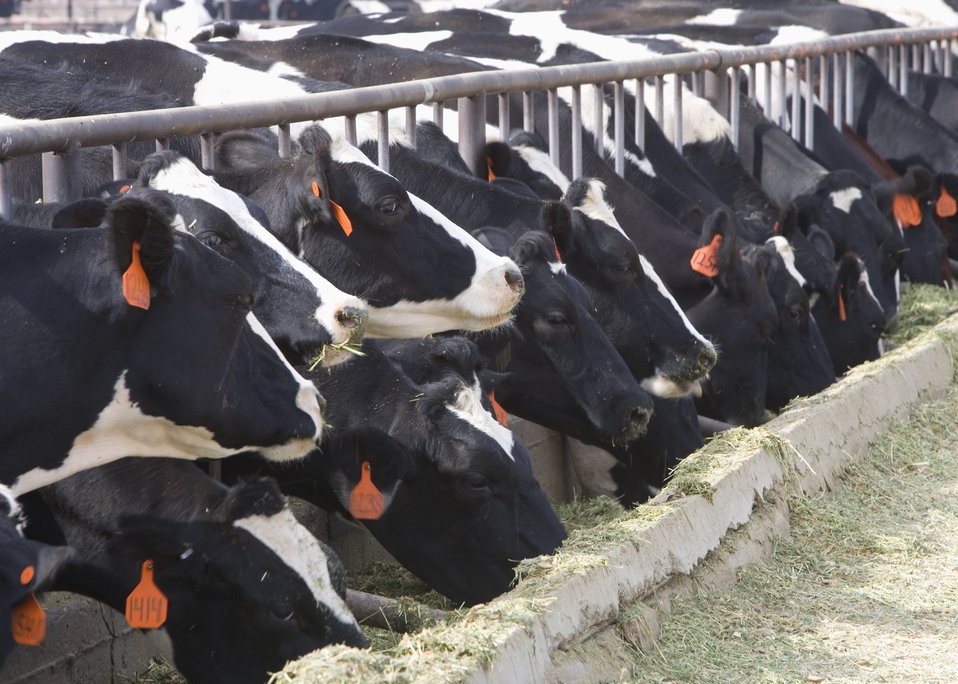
Feeding bunks at a dairy in California.